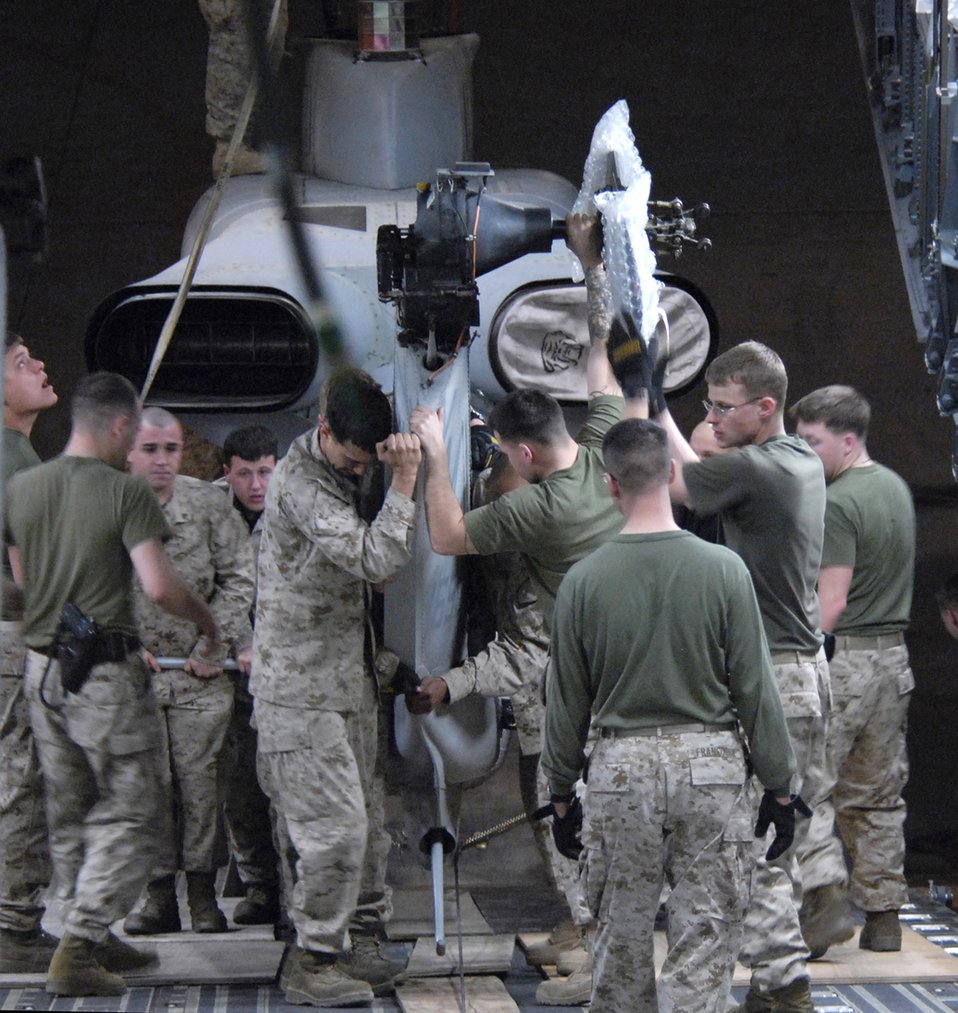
Marines move through Manas Air Base

Marines with the 24th Marine Expeditionary Unit load three AH-1W Super Cobra helicopters onto an Air Force C-17 Globemaster III March 16 at Manas Air Base, Kyrgyzstan. The Marines are headed downrange to Afghanistan as part of the troop plus-up authorized by the president in January. The Marines will be a part of the NATO-International Security Assistance Force, conducting operations to extend the authority of the Government of the Islamic Republic of Afghanistan.